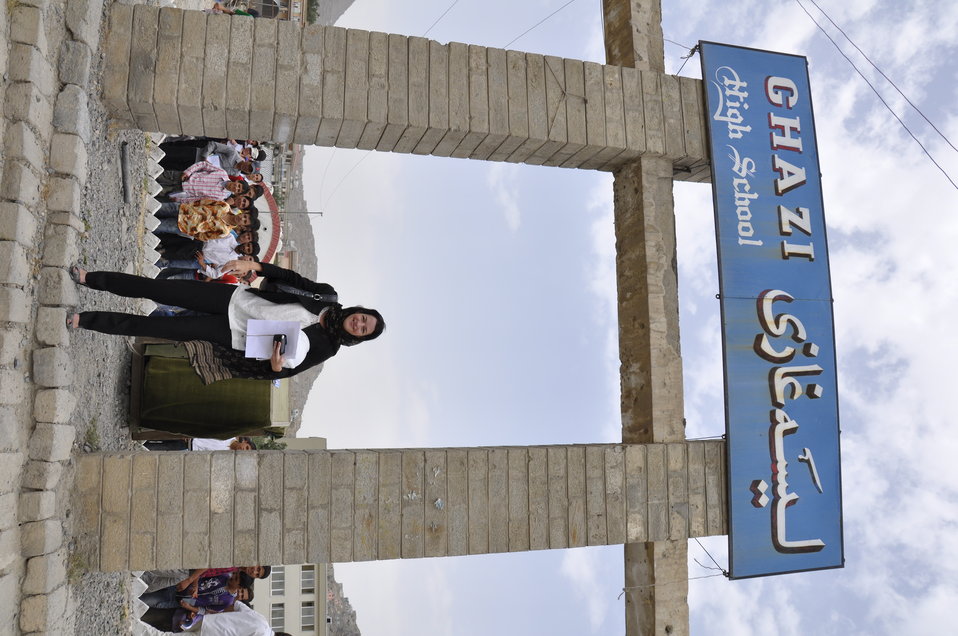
Ghazni High School in Kabul